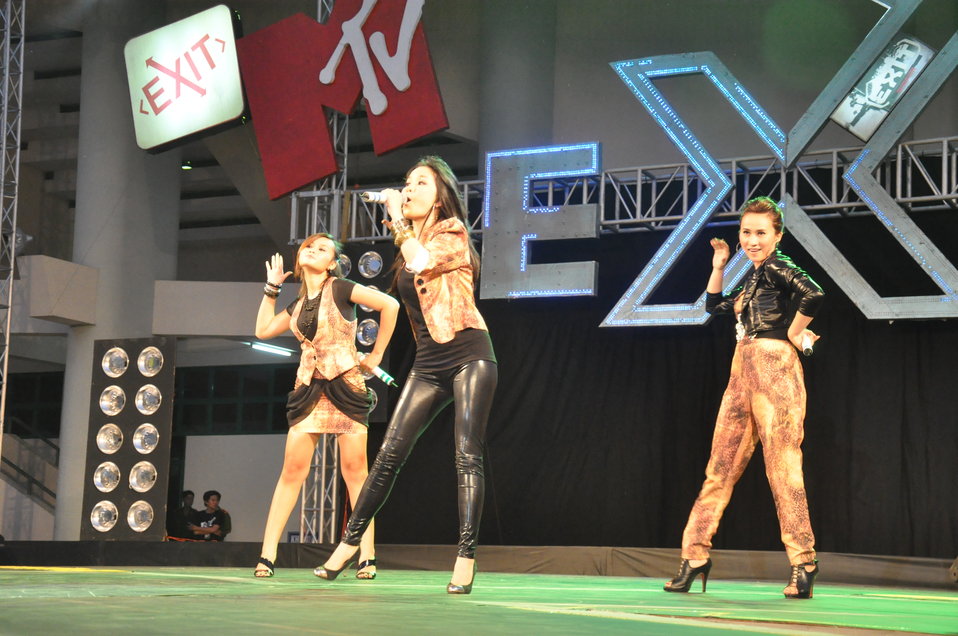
USAID and MTVEXIT concert in Can Tho

Concert in Can Tho against human trafficking, April 10, 2010